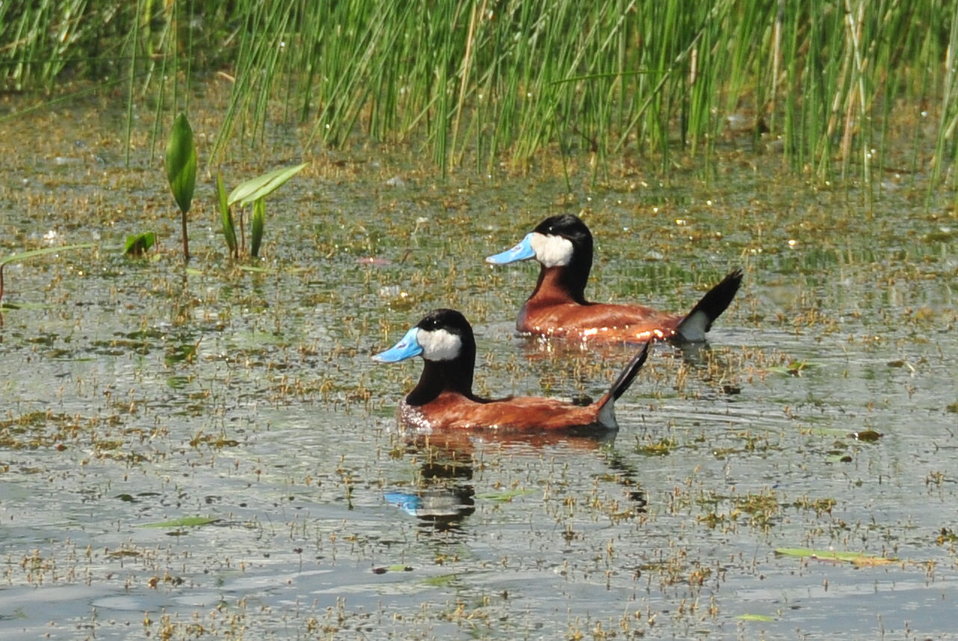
Pair of Ruddy Duke Drakes Sand Lake WMD